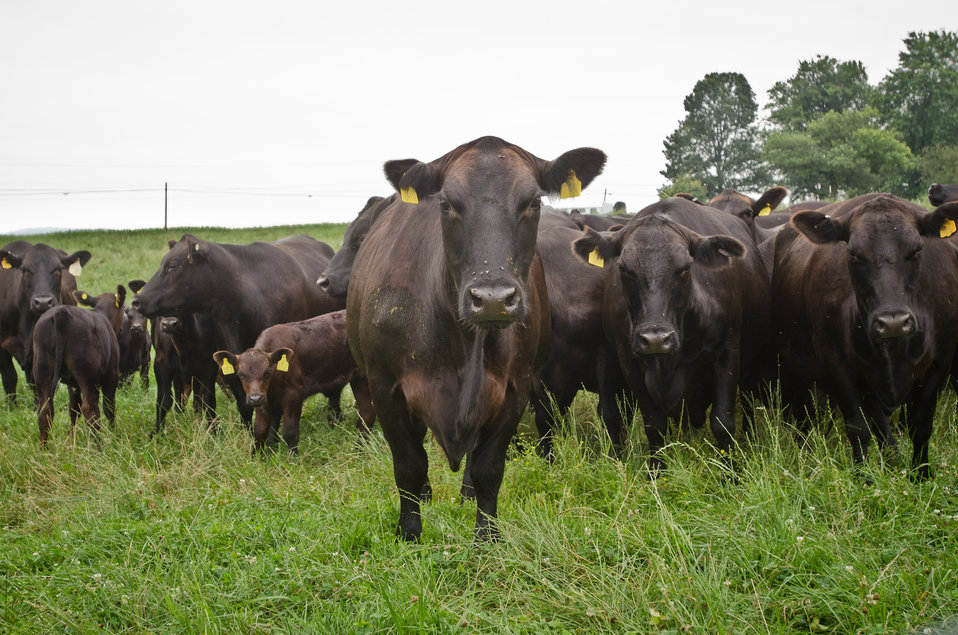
Black Angus cows and calves graze organic pastures, and for added nutrition and variety, they enjoy a daily feeding of sweet silage at Nick’s Organic Farm, owned by Nick Maravell, in Adamstown, MD on Friday, July 12, 2013. The white plastic wrapped bales of pasture grass and alfalfa have been fermenting for months to create sweet silage that stores well and can be used to feed cattle at varying amount all year long. The fermentation process sweetens the taste and increases the vitamin levels in it. The farm produces Black Angus beef, chicken, turkey, eggs, hay, soybeans, corn, alfalfa, orchard grass, rye; and other crops. The cattle are100% grass-fed receiving certified organic pasture, certified organic hay (in winter), water and mineral salts mixed with sea kelp. The cattle are not fed hormones, antibiotics or animal products. Poultry feed from grain is ground from organic grain. The poultry also graze on organic pastures. The farm has conducted on-farm research with federal, state and non-profit agencies to refine organic practices. An organization such as the U.S. Department of Agriculture (USDA) Agricultural Research Service (ARS) center in Beltsville has been able to conduct research to improve organic crops and to breed and manage the cattle so that they have.